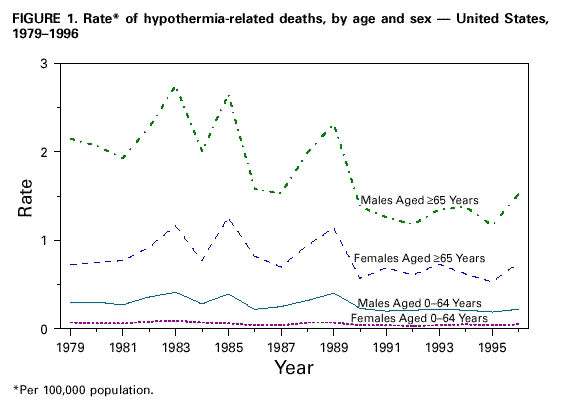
Rate of hypothermia-related deaths, by age and sex--United States, 1979-1996.